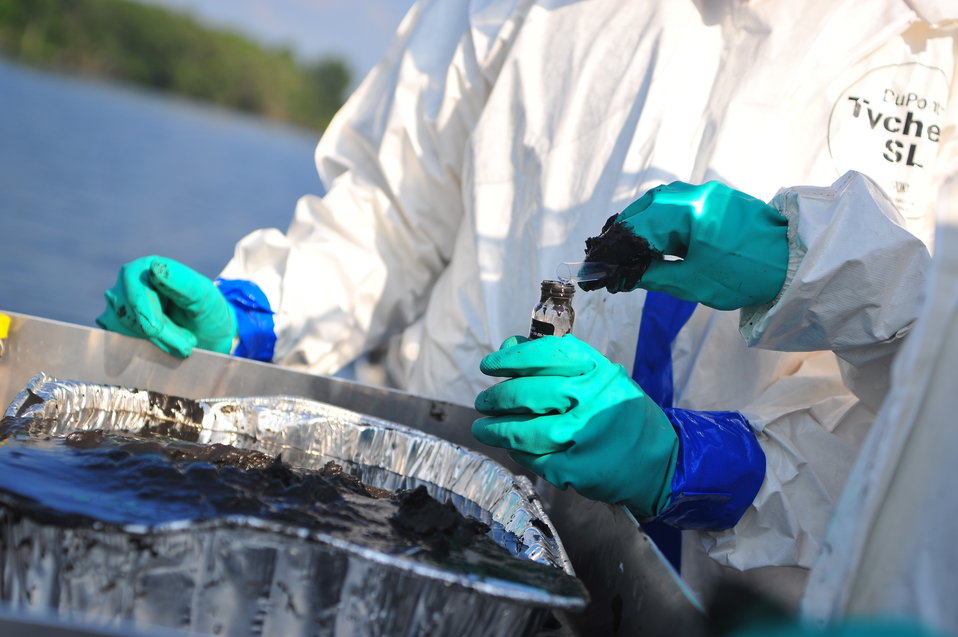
EPA's response to the Enbridge oil spill

August 2, 2010 - Water and sediment sampling operations during Enbridge Spill Response on Morrow Lake near Battle Creek, Michigan from Mudpuppy II, EPA's news research vessel.